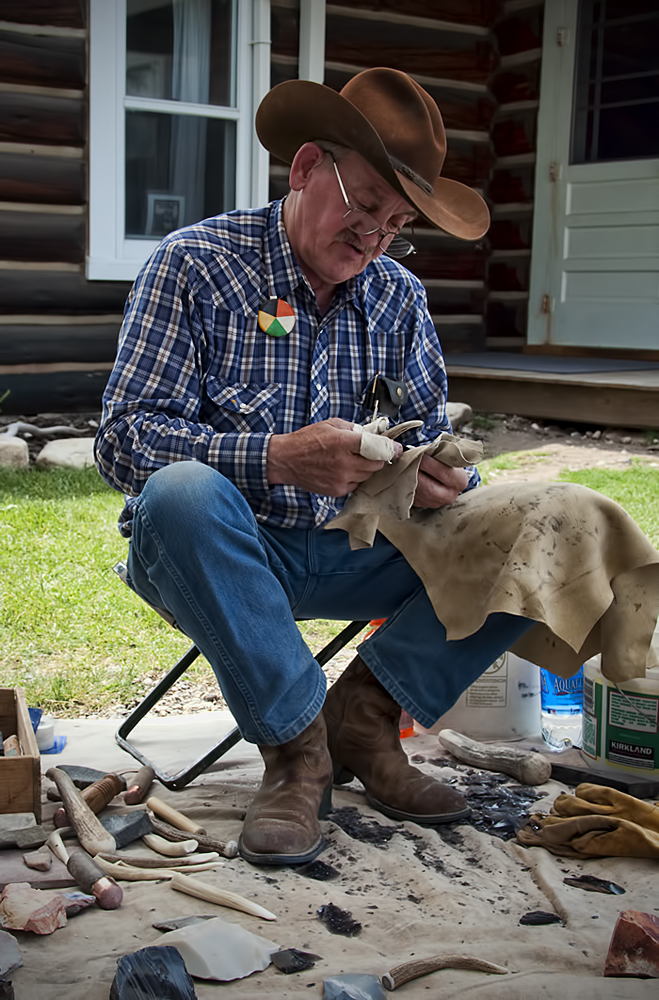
The Unique Skill of Flint Knapping

Tom Lucas, who has a working knowledge of ancestral tool making, shared his skill at the historic Miller House during the refuge's centennial weekend. He entertained small groups one afternoon, with some people staying as long as 30 minutes to watch him work.

Credit: USFWS / BJ Baker, National Elk Refuge volunteer